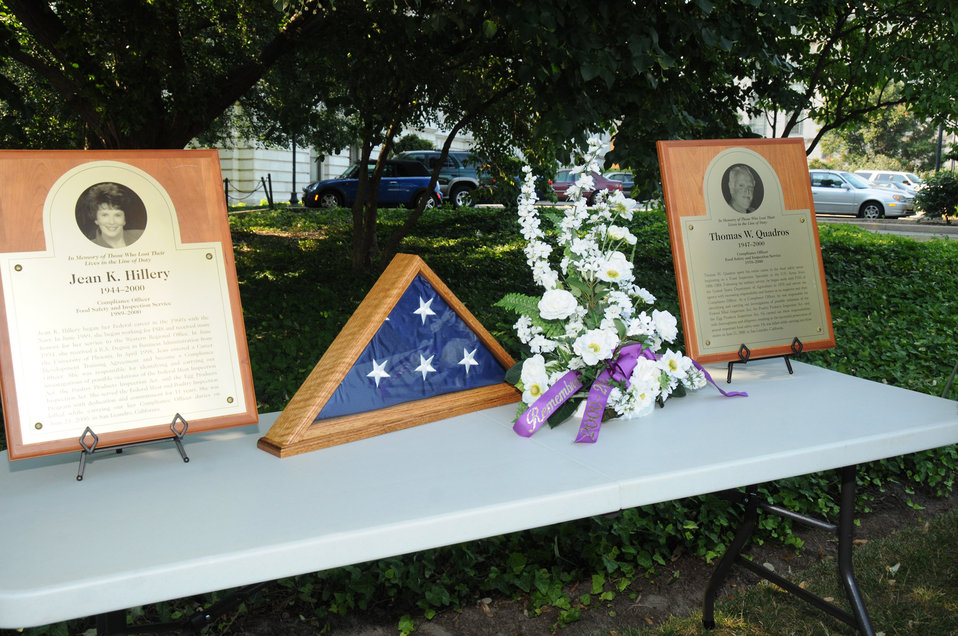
A ceremony to honor slain Food Safety Inspection Service Compliance Officers Jean Hillery and Thomas Quadros who were gunned down in the line of duty while inspecting a processing plant in CA. was held at the U.S. Department of Agriculture in Washington, DC, on Monday June 21, 2010. USDA Photo 10di1413-0043.